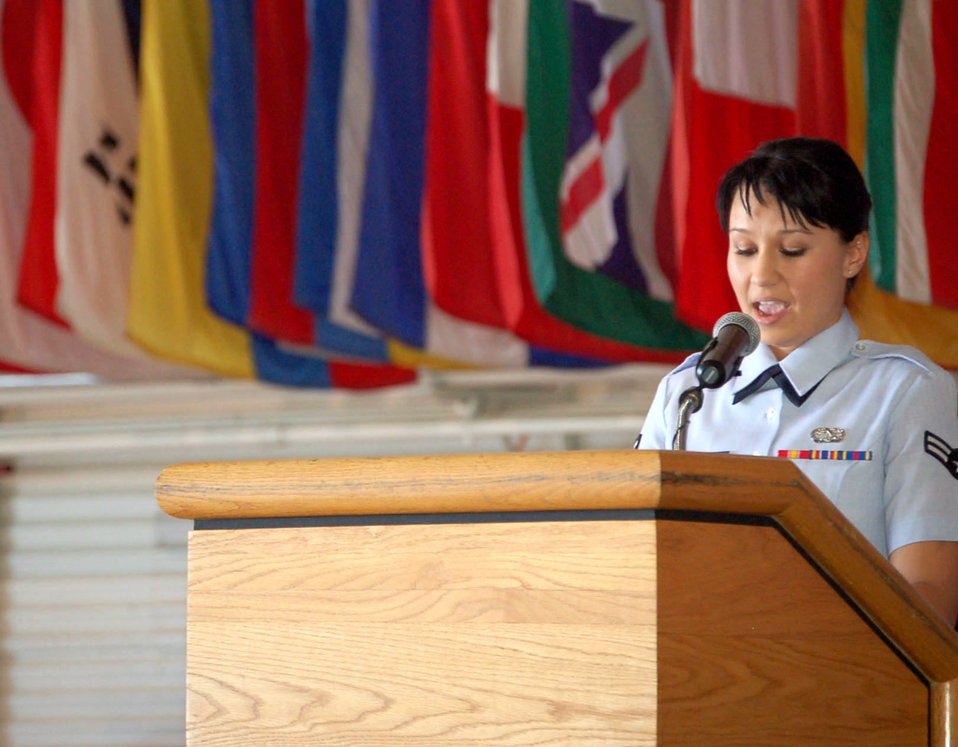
Airman takes next step toward her American dream

Airman 1st Class Olga Bilobol speaks to the crowd about her new citizenship at a naturalization ceremony in the Air Force Thunderbirds' Air Demonstration Squadron hangar Nov. 6 at Nellis Air Force Base, Nev. Airman Bilobol was one of 33 military members to participate in the event, which is the last step in the process of becoming an American citizen. The new citizens included representatives from all the branches of the military. The event was part of the base's Heritage to Horizons celebration of the Air Force's 60th Anniversary.